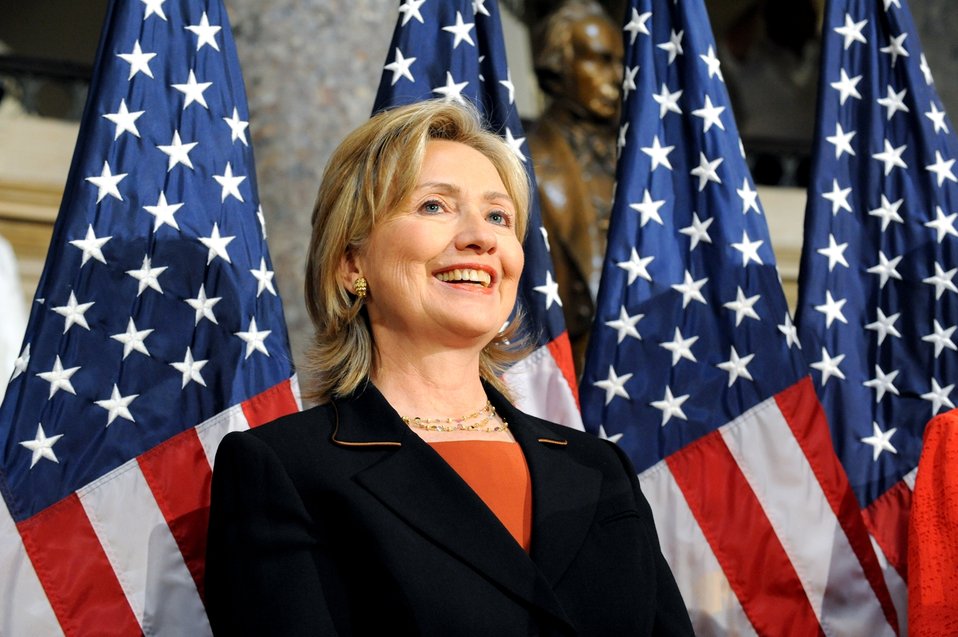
Secretary Clinton Speaks at the 30th Anniversary of the Women's History Project

U.S. Secretary of State Hillary Rodham Clinton speaks at the celebration of the 30th Anniversary of the Women's History Project, where she was honored at the Statuary Hall, U.S. Capitol, Washington, D.C., March 25, 2010.